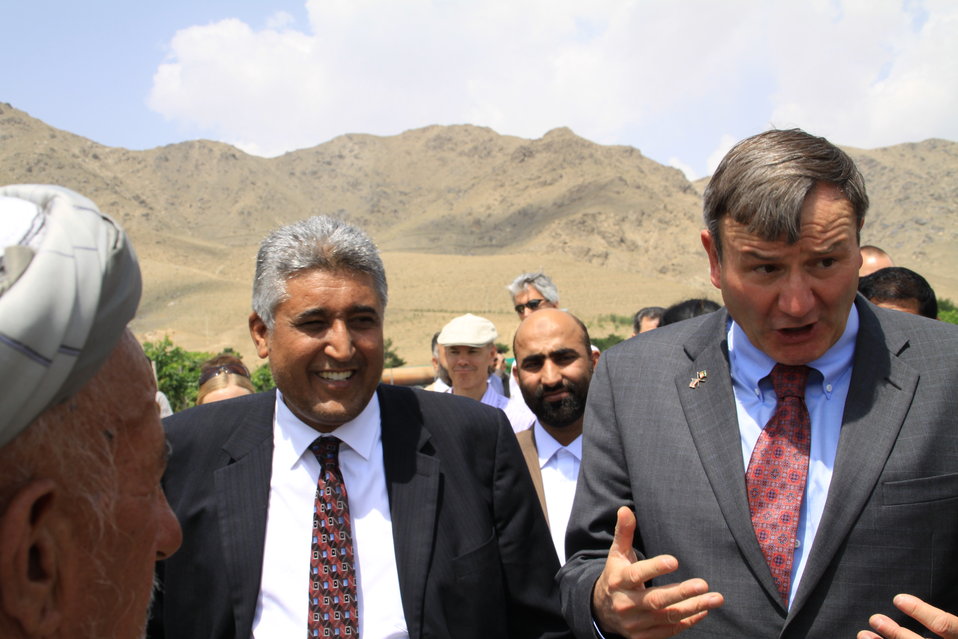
Badam Bagh Farm